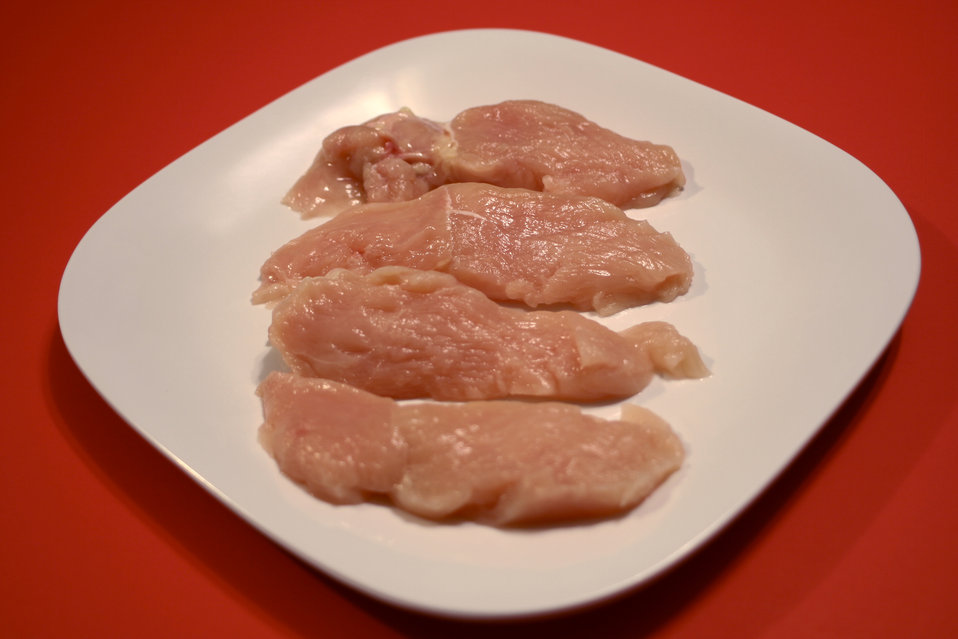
This photograph depicts a number of skinned and deboned chicken breasts that had been set atop a clean, white ceramic serving plate.